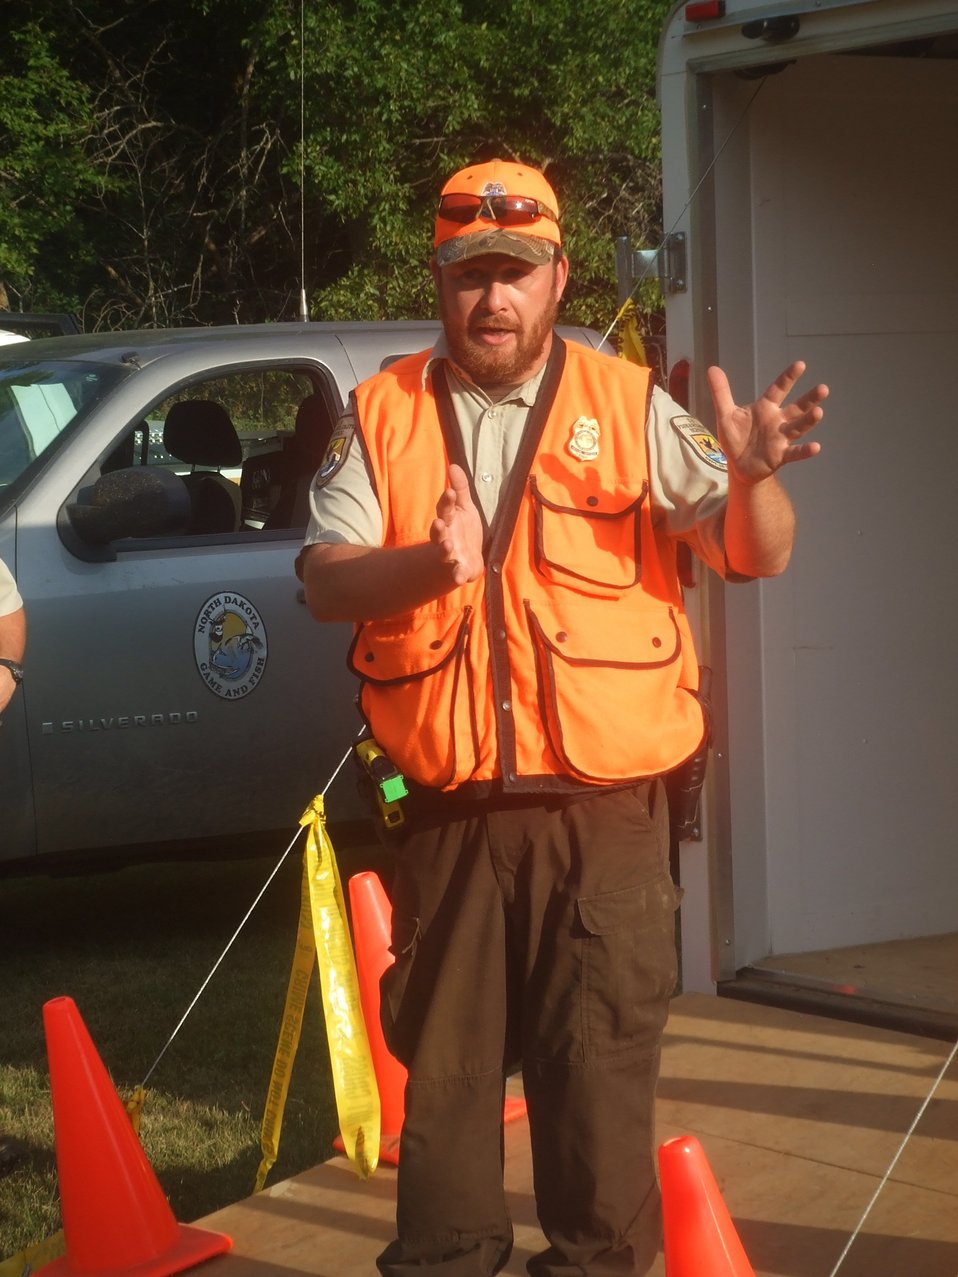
2011 Greenwing Day - Game Warden scenario session

Des Lacs National Wildlife Refuge, Tasker's Coulee

Federal Officer Tighe Teets